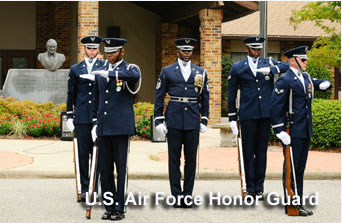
U.S. Air Force Honor Guard

The U.S. Air Force Honor Guard Drill Team ends a performance in Florida. This is one of many stops that the Drill Team will make during their summer tour.